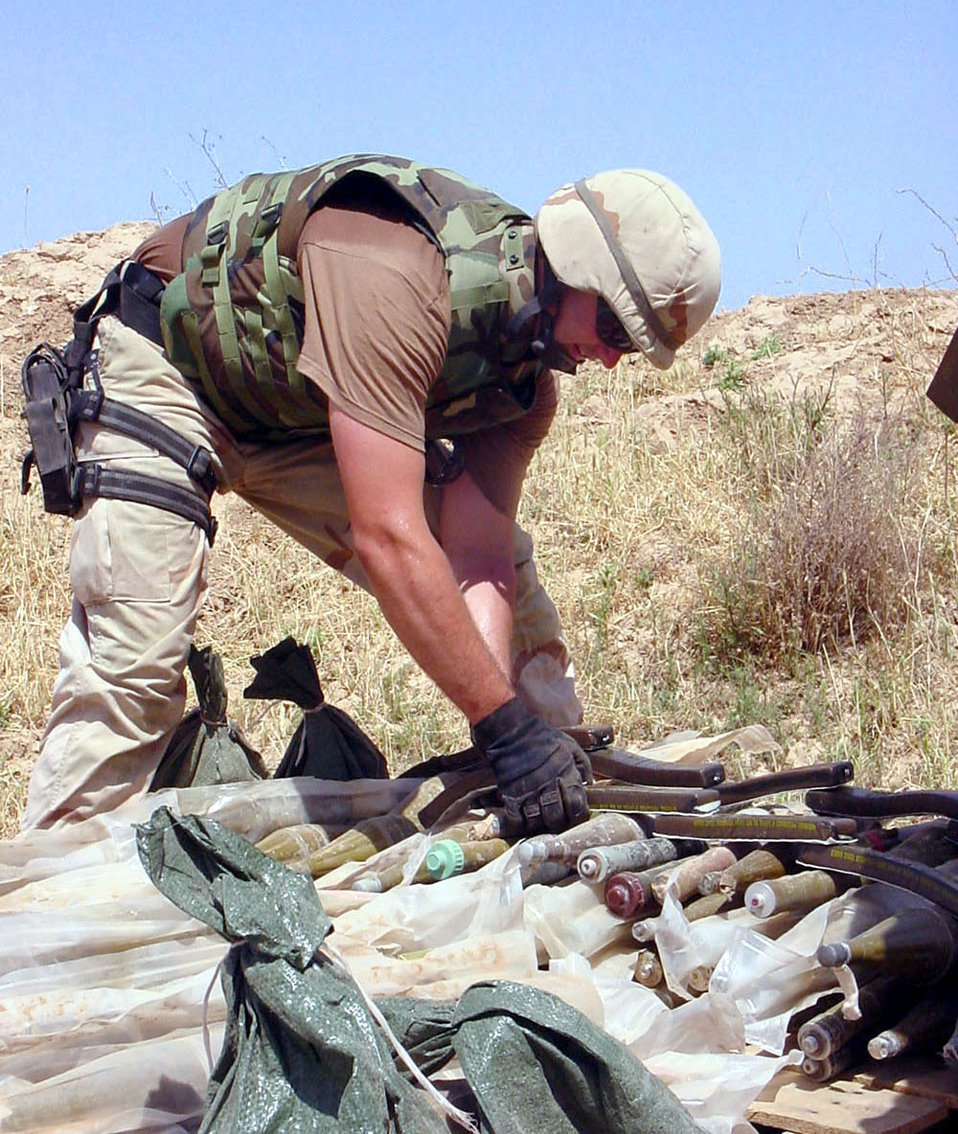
Explosive detonation

OPERATION IRAQI FREEDOM (AFPN) -- Staff Sgt. Neil Jones places C-4 explosives on munitions destined for detonation. Jones is assigned to the 506th Expeditionary Civil Engineer Squadron's explosive ordnance disposal team. The team detonated 400 projectiles, marking the first large disposal from Kirkuk Air Base, Iraq. EOD personnel recovered the munitions from various local fighting positions.